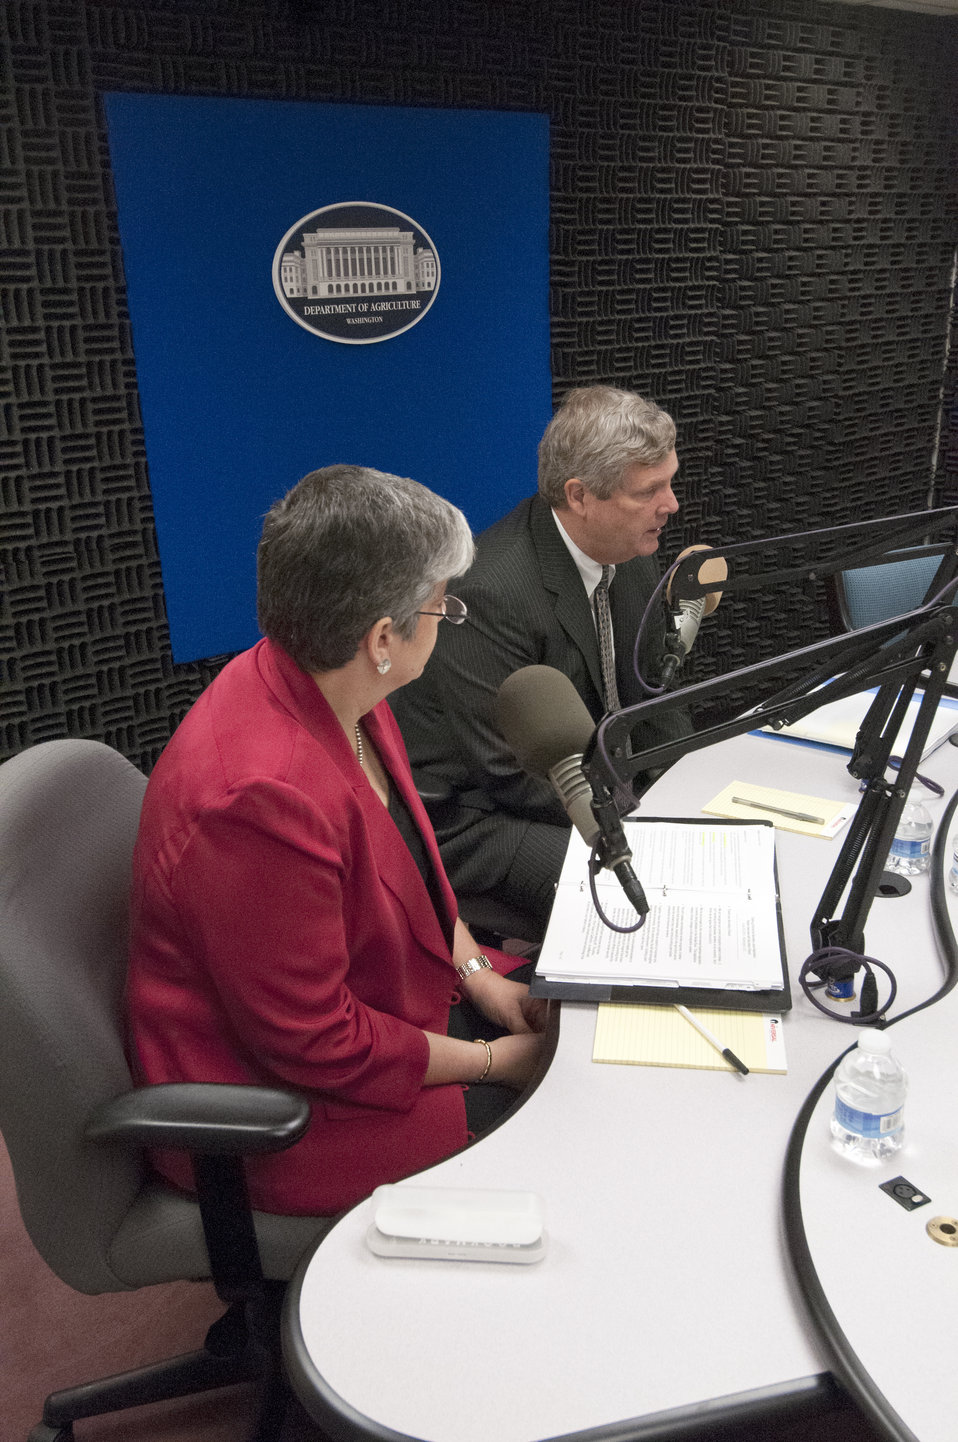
Agriculture Secretary Tom Vilsack and Homeland Security Secretary Janet Napolitano host a national media call to discuss the importance of comprehensive immigration reform at the U.S. Department of Agriculture on Tuesday, Jun. 18, 2013.